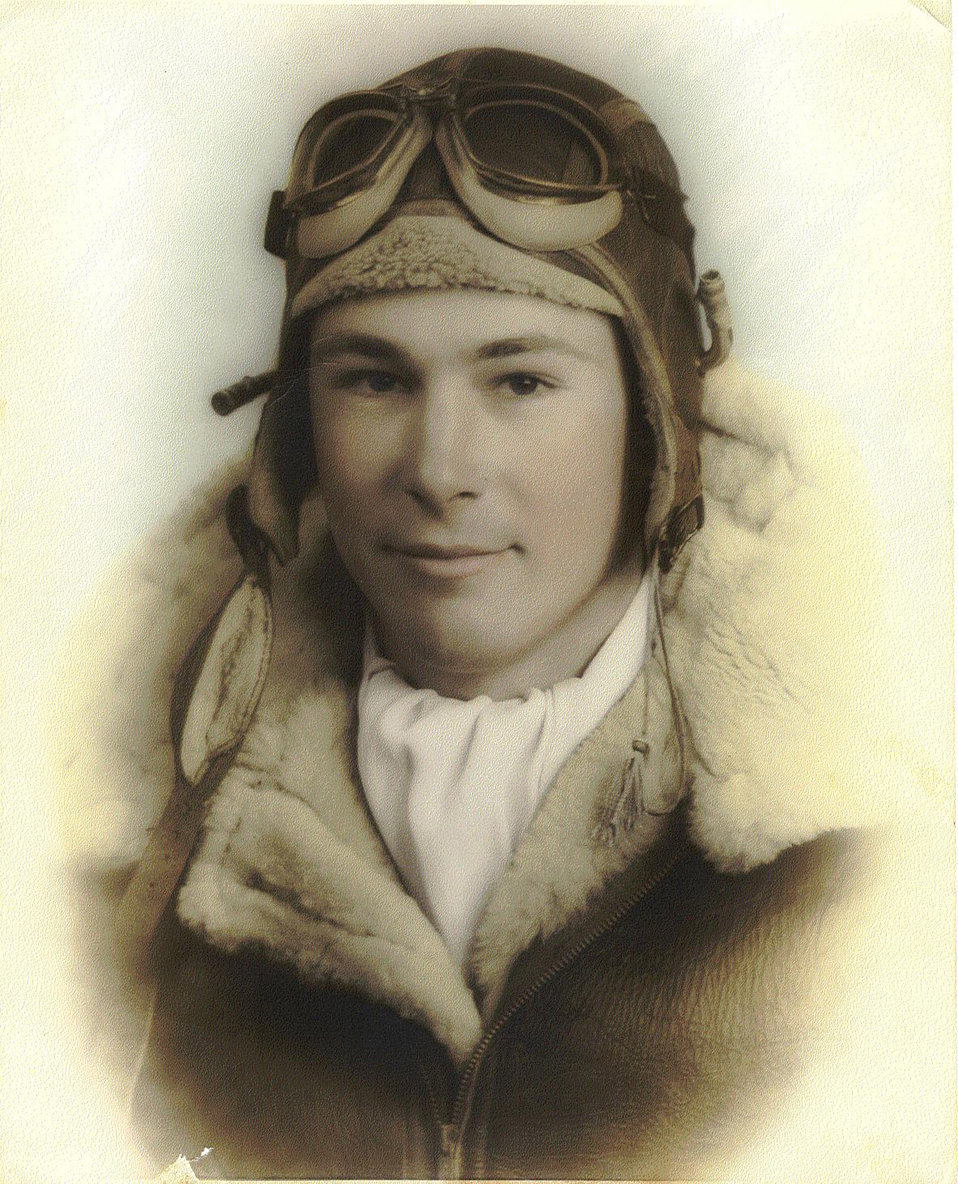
2nd Lt. Lloyd H.

Second Lt. Lloyd H.